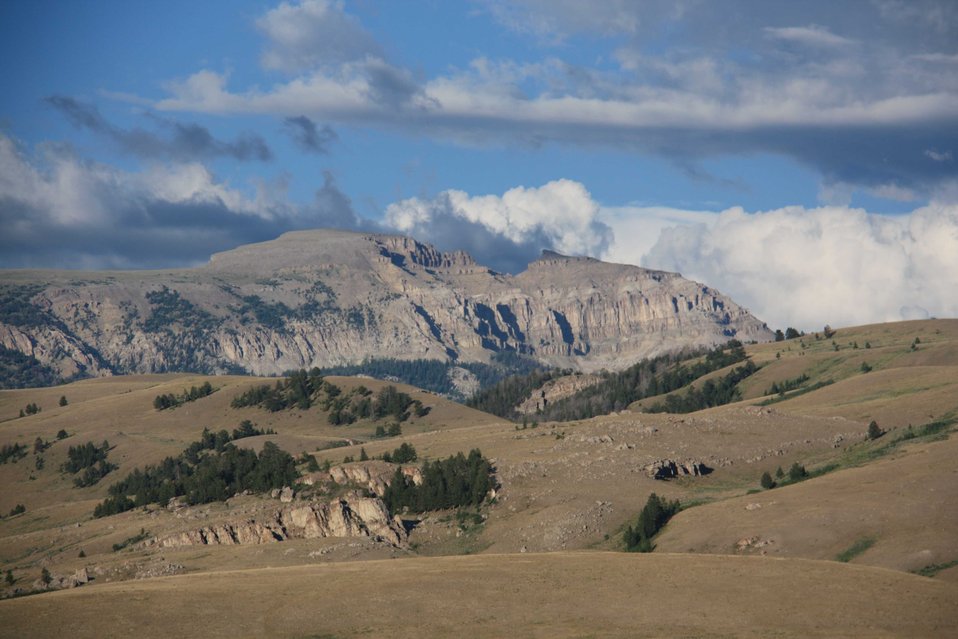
Sleeping Indian

Sheep Mountain is a prominent peak to the east of the National Elk Refuge. It is locally referred to as Sleeping Indian because of its resemblance to a Native American, complete with headdress, lying on his back with his arms crossed on his chest.